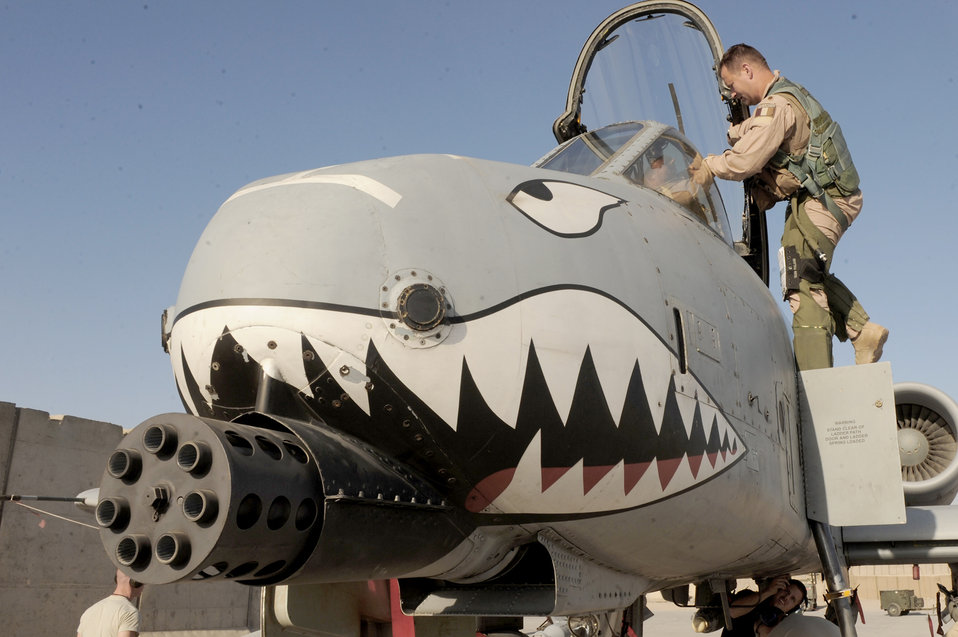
US, French pilot swap

French air force Maj. Yann Malard exits an A-10C Thunderbolt II after a mission Nov. 10, 2010, at Kandahar Airfield, Afghanistan. Major Malard is an assistant duty officer with the 75th Expeditionary Fighter Squadron. He is deployed with the American unit as part of the three-year foreign exchange pilot program.